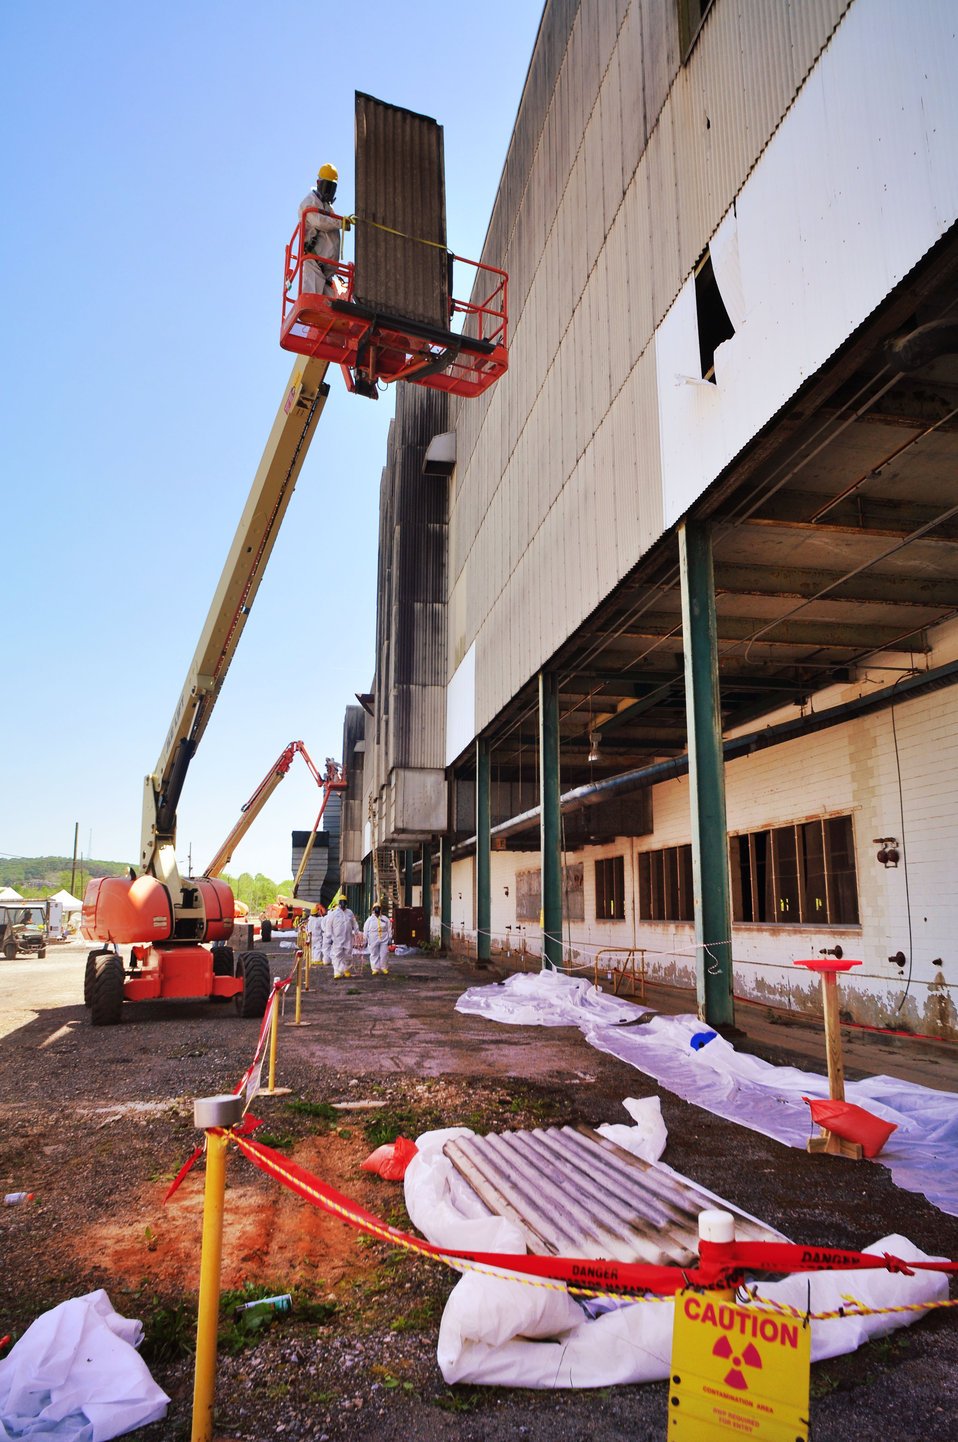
Transite Panels Removal from K-31 Building 2014 Oak Ridge

14-057 DOE photo Lynn Freeny 5-6-2014 ETTP K-31 Oak Ridge Tennessee